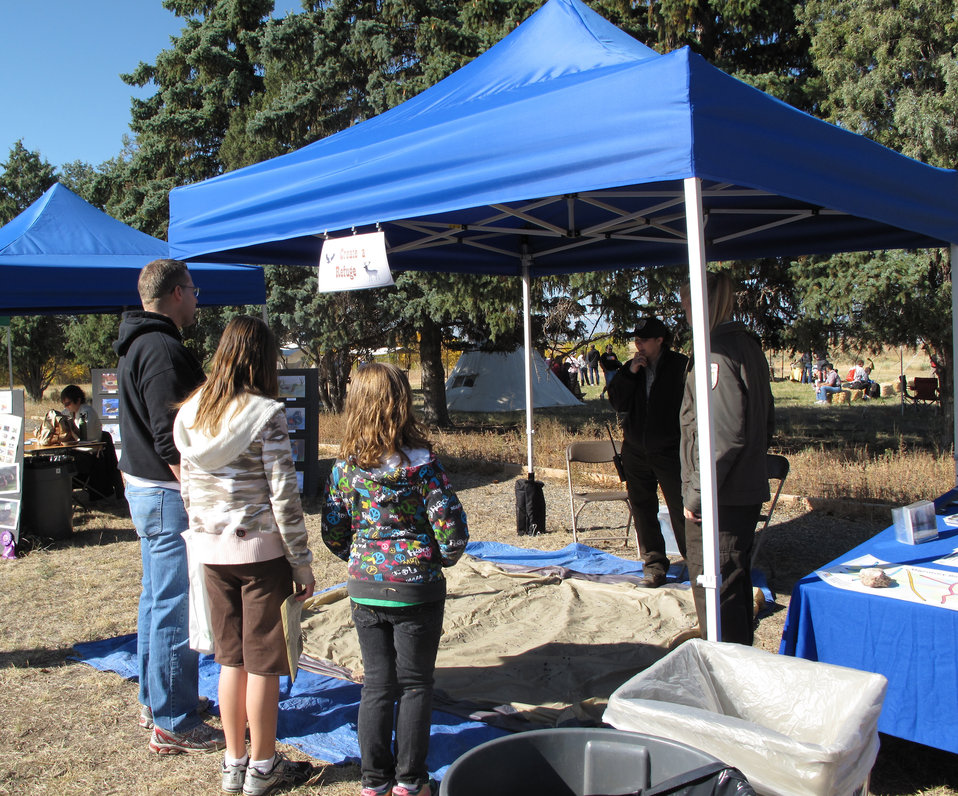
Refuge Round-up 2010

Find a refuge all over the country!